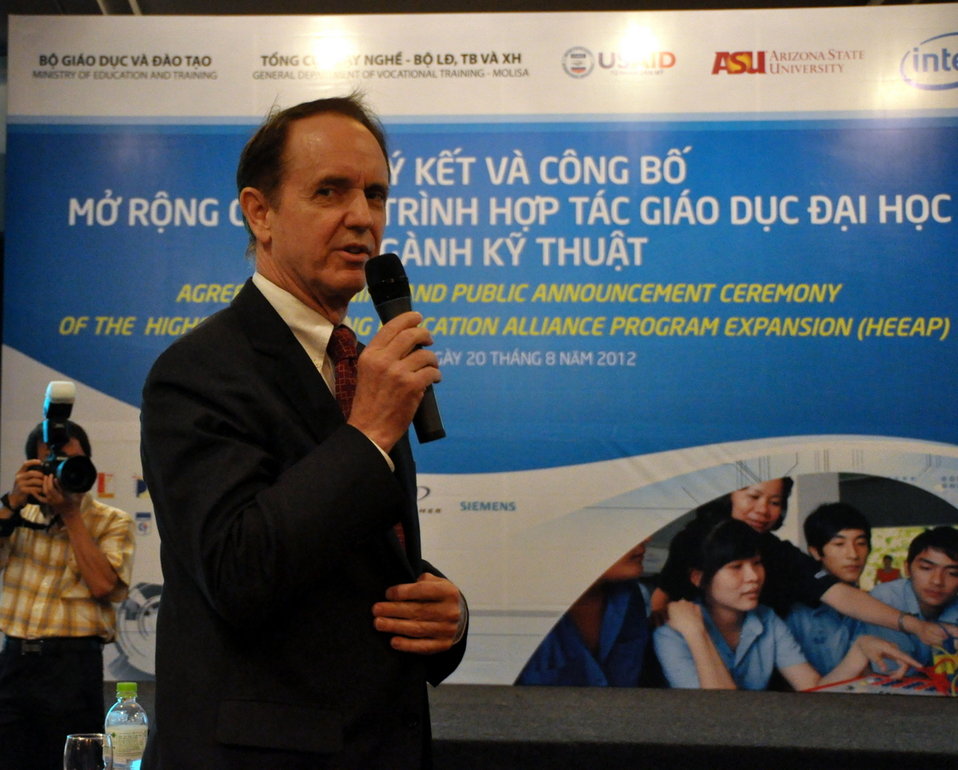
USAID Mission Director Francis Donovan at the Higher Engineering Education Alliance Program Expansion Launch

Hanoi, August 20, 2012.